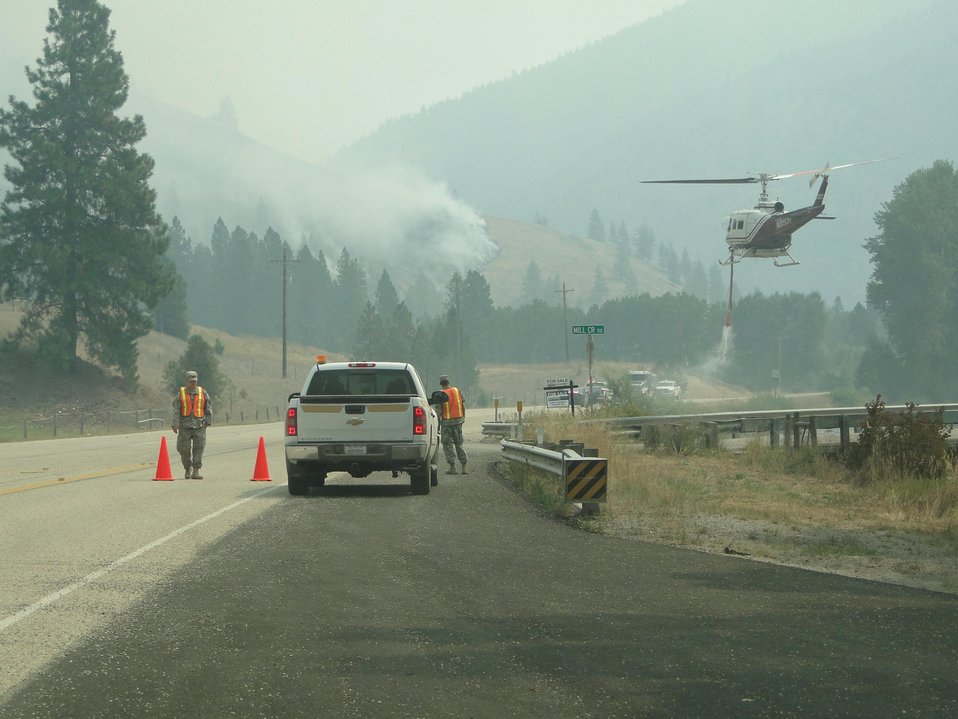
A helicopter drops water on a slope on the north side of the road just east of the Mill Creek Road junction on US Hwy 12 at the Lolo Creek Fire. The Montana National Guard protects access to private property. The Lolo Creek Fire in the Lolo National Forest near Lolo, MT began on Aug. 18, 2013 by lightning has consumed approximately 10,892 acres and is 47% contained.